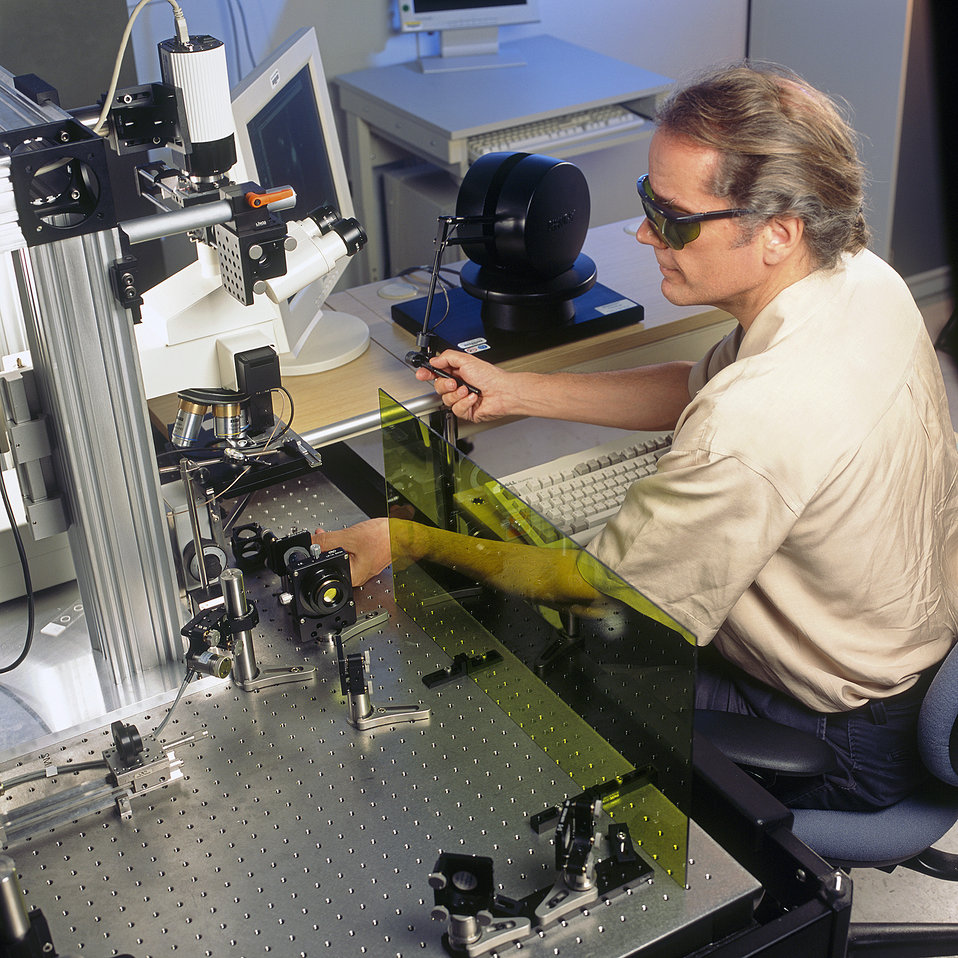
Nanotechnology; Nanomanufacturing

Physicist Thomas LeBrun uses a special joystick to manipulate nanowires with 'optical tweezers.' A highly focused laser beam attracts microscopic objects and can be used to pick up and precisely position nanocomponents for building semiconductor circuits or biosensors smaller than a red blood cell. Tools for manipulating nanocomponents will help accelerate research on the performance of new nanotechnologies.